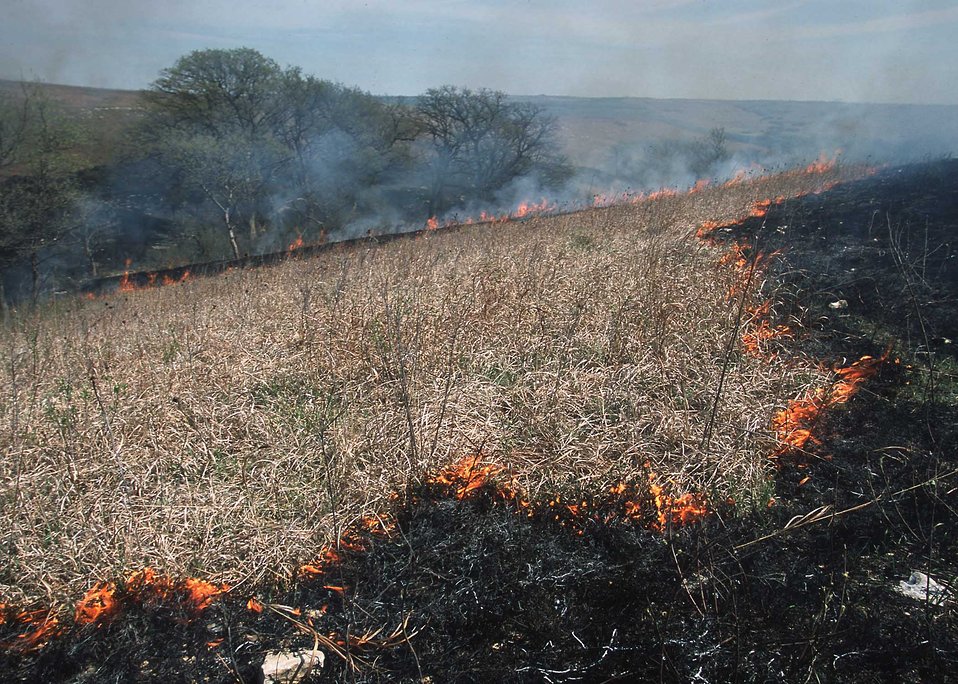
Prairie burn to stimulate new growth and recycle nutrients. Konza Biological Research Station, Manhattan, KS.